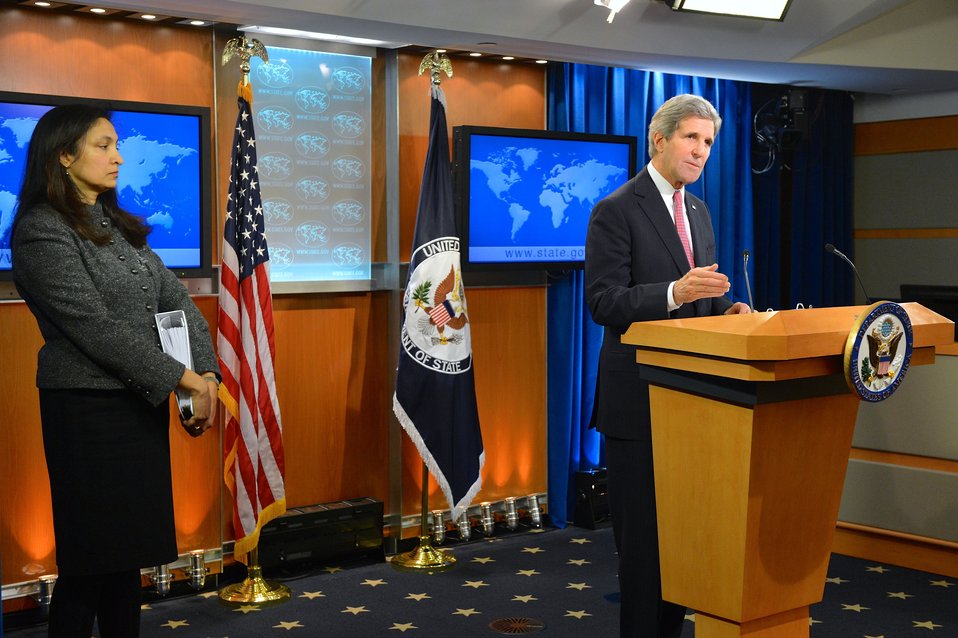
Secretary Kerry Releases the Annual Country Report on Human Rights

U.S. Secretary of State John Kerry releases the Annual Country Report on Human Rights at the U.S. Department of State in Washington, D.C., on February 27, 2014.